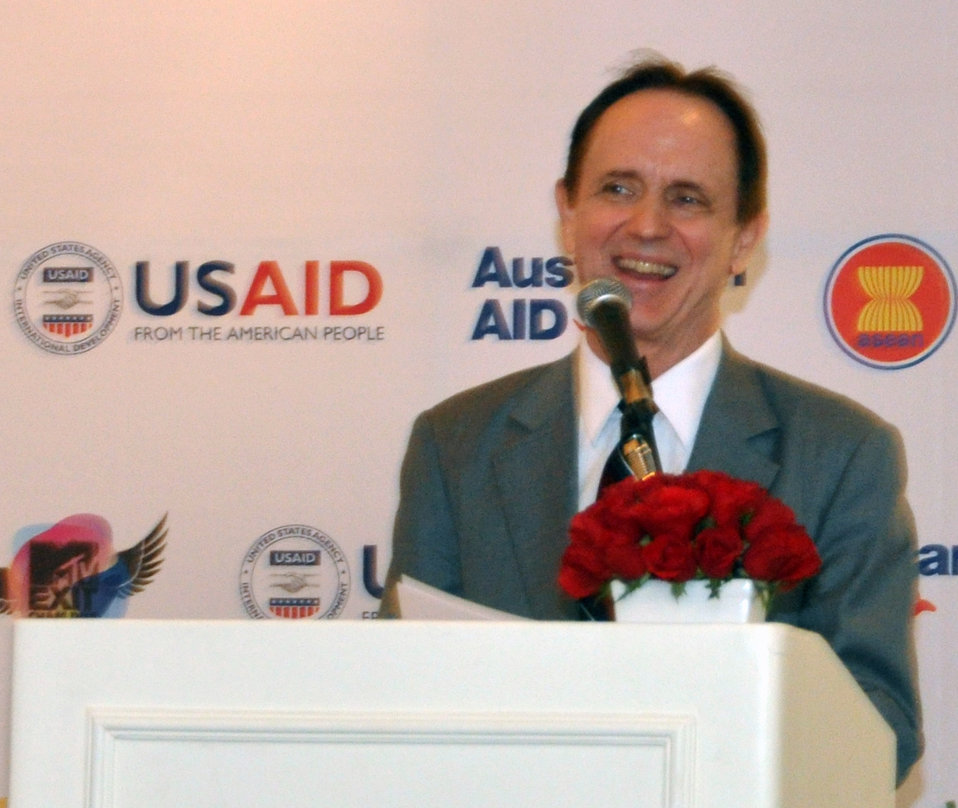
USAID Mission Director Francis Donovan speaks at the MTV EXIT press launch in Hanoi

USAID joins MTVExit to launch documentary and awareness campaign against human trafficking